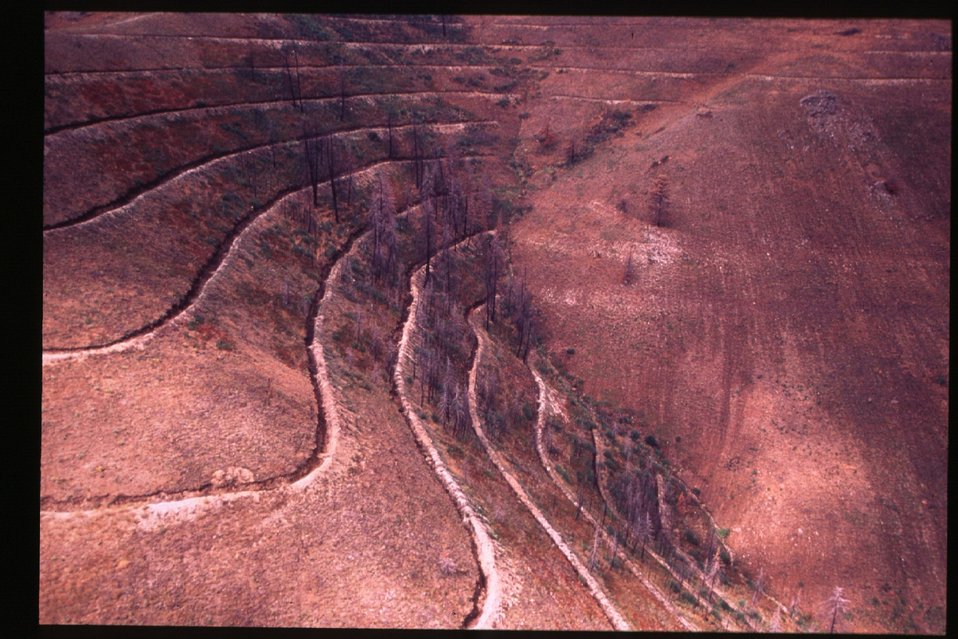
Fire 8th Street Fire Rehab Trenching Four Rivers Field Office LSRD Lower Snake River District